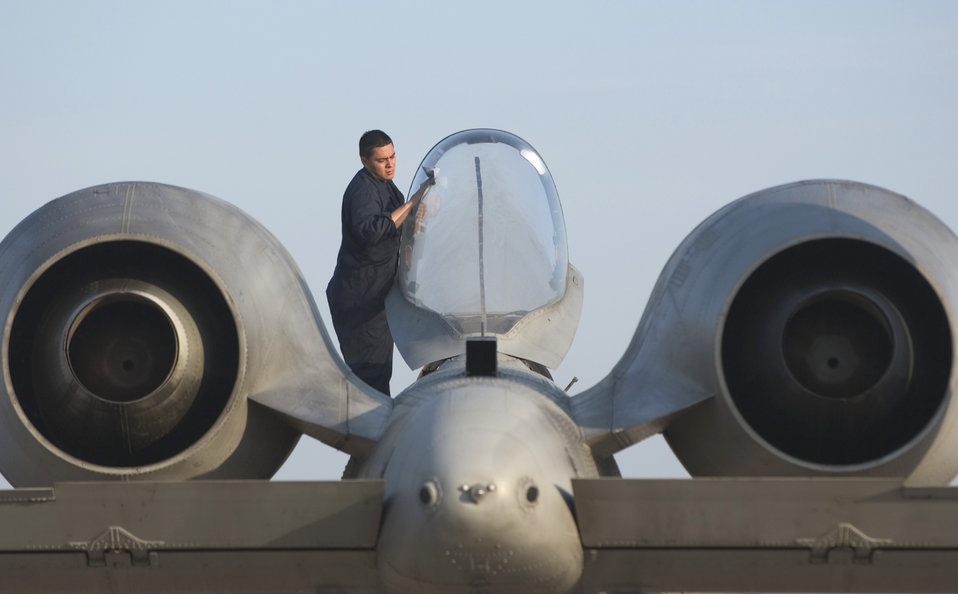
Cope Tiger '06

KORAT ROYAL AIR FORCE BASE, Thailand (AFPN) -- Senior Airman Isaac Ibarra cleans an A-10 Thunderbolt II canopy before an exercise Cope Tiger '06 mission here Feb. 8. Airman Ibarra is a crew chief with the 25th Aircraft Maintenance Unit at Osan Air Base, South Korea.